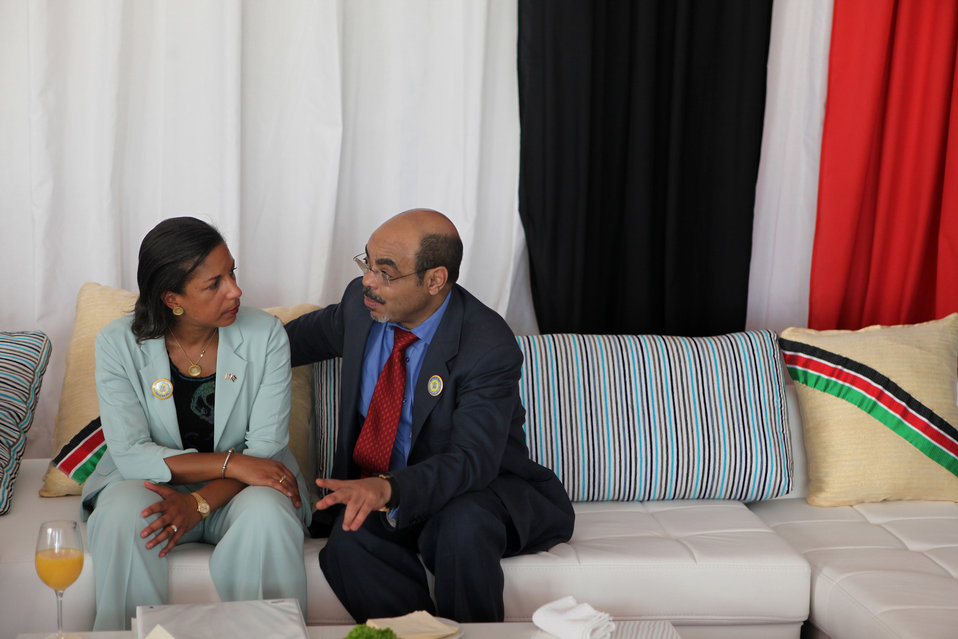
South Sudan Independence Day

Ambassador Susan E. Rice, U.S. Permanent Representative to the United Nations, meets with Ethiopian Prime Minister Meles Zenawi, former Chairman of the African Union, during the Republic of South Sudan Independence Day celebrations in Juba, South Sudan on July 9, 2011.